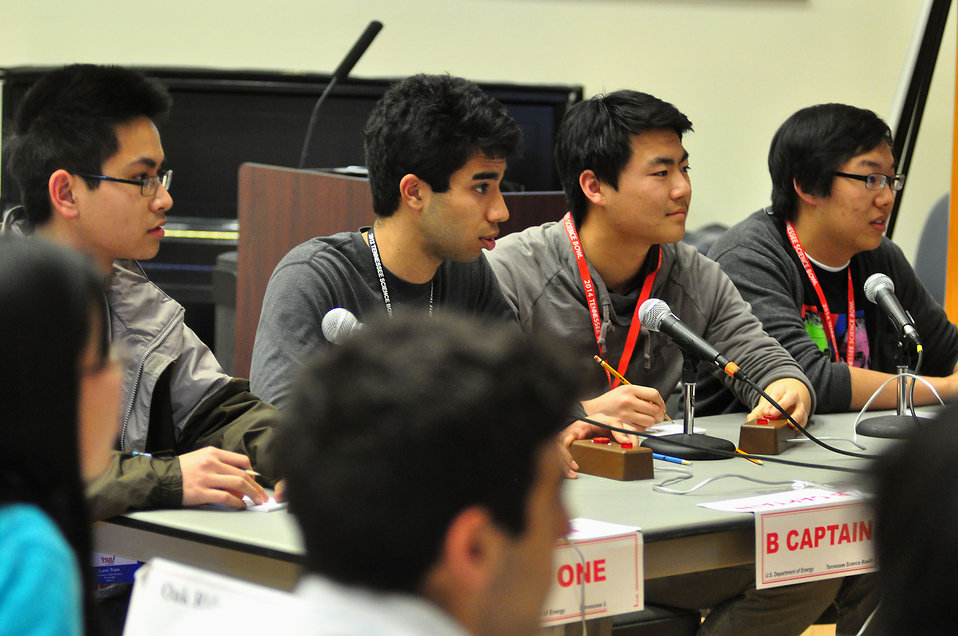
Farragut 2014 TN DOE Science Bowl

DOE photo Lynn Freeny 2-22-2014 Pellissippi State Blount Campus